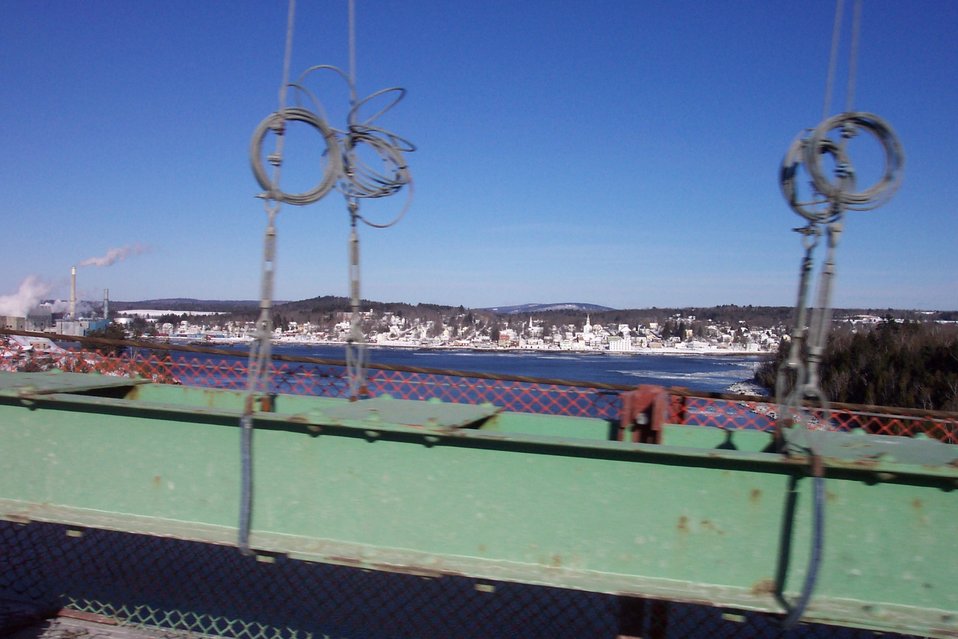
A view of Bucksport from the Waldo-Hancock suspension bridge across the Penobscot River.